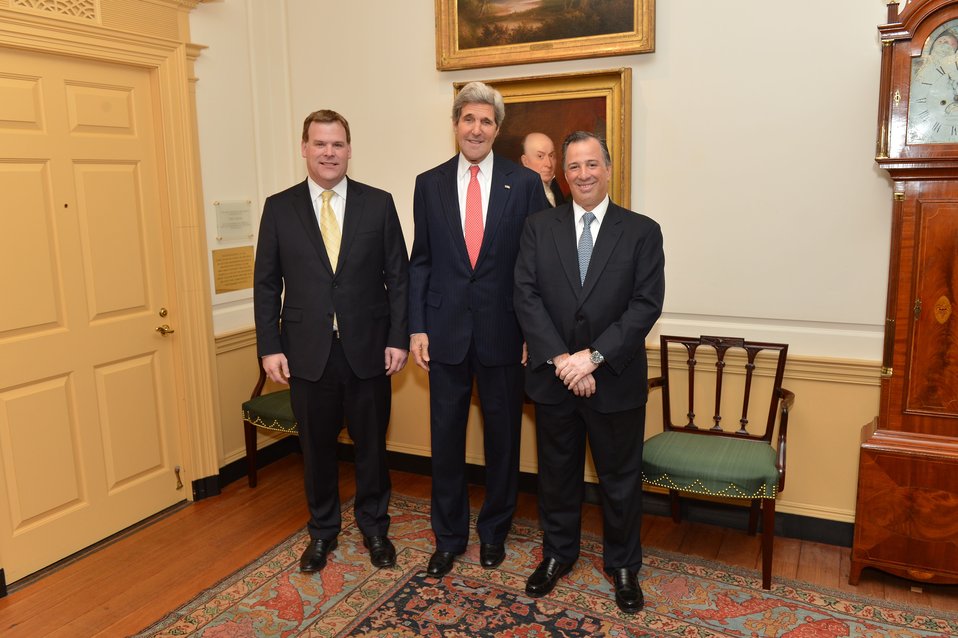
Secretary Kerry, Canadian Foreign Minister Baird, and Mexican Foreign Secretary Meade Pose for a Photo

U.S. Secretary of State John Kerry poses for a photo with his North American counterparts, Canadian Foreign Minister John Baird, left, and Mexican Foreign Secretary Jose Antonio Meade, right, at the start of the North American Trilateral Ministerial at the U.S. Department of State in Washington, D.C., on January 17, 2014.